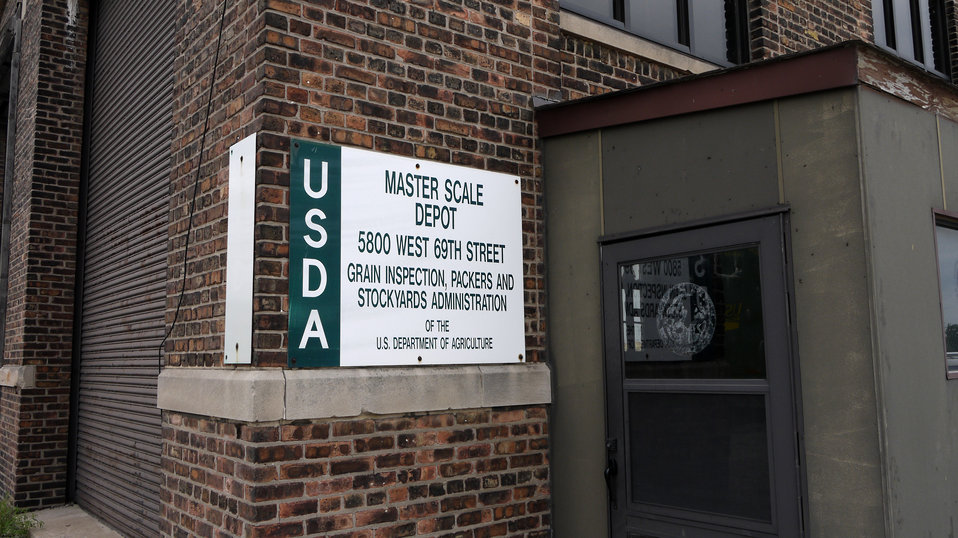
This is the entrance to U.S. Department of Agriculture’s (USDA) Grain Inspection, Packers, and Stockyard Administration (GIPSA) Master Scale Depot in Chicago, IL on Jul. 2, 2013. USDA GIPSA entered into an agreement with the National Institute of Standards and Technology (NIST) and the Association of American Railroads (AAR) in 1980 transferring responsibility to USDA’s GIPSA to maintain the Master Scale facility in Chicago, IL and calibrate all the master scales in the continental U.S. annually.